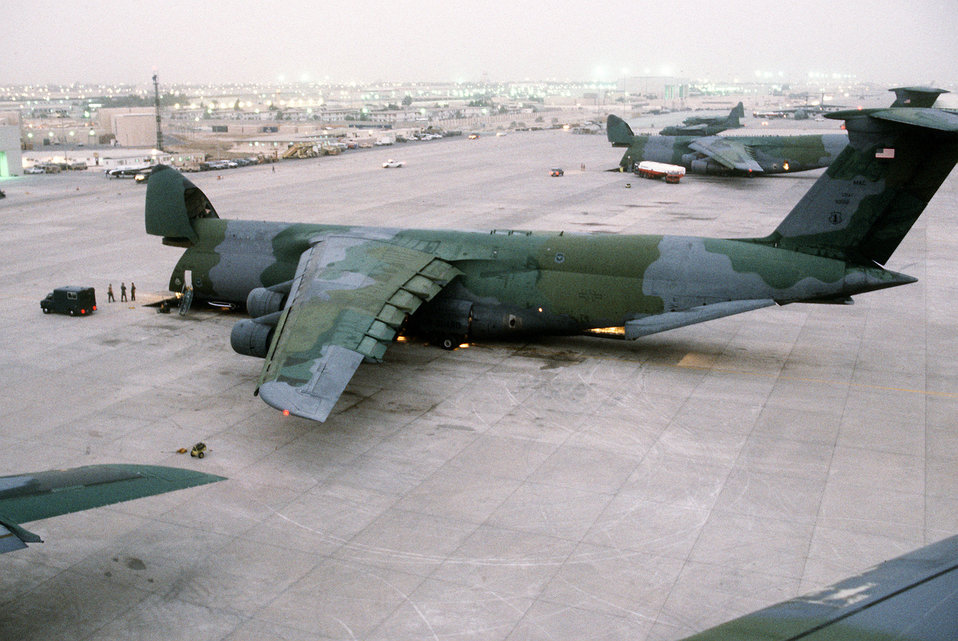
C-5A Galaxy

1990's -- Supplies and equipment are unloaded through the nose of a C-5A Galaxy transport aircraft of the U.S. Air Force Reserve, Military Airlift Command, in support of Operation Desert Shield.